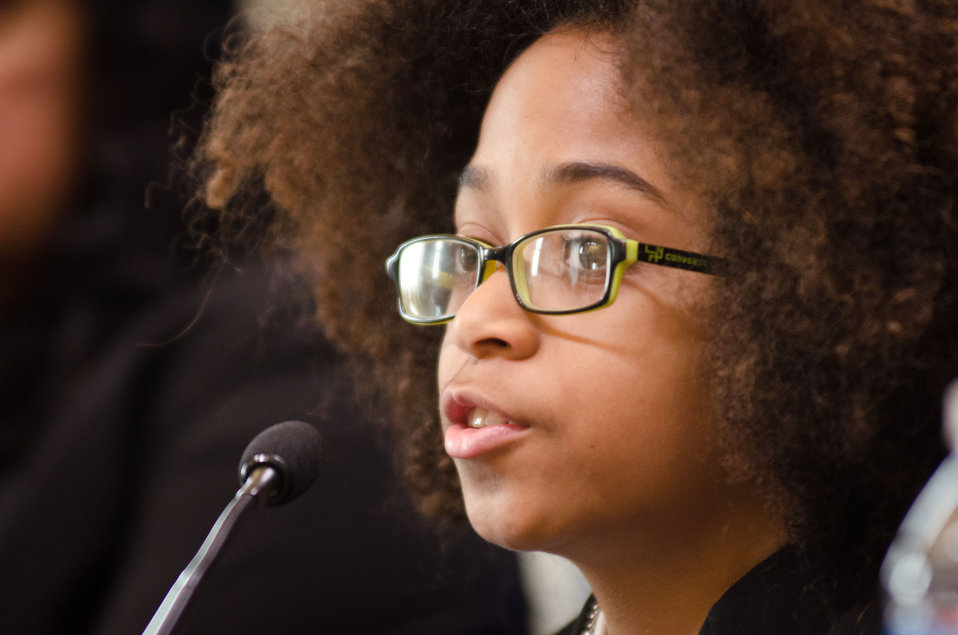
Joshua’s Heart Foundation President Joshua Williams is one of eleven honorees recognized for their efforts to reduce hunger and increase food security in the U.S. and internationally at the White House Champions of Change Strengthening Food Security at Home and Abroad Event held at the White House on Thursday, September 6, 2012, in Washington, D.C.